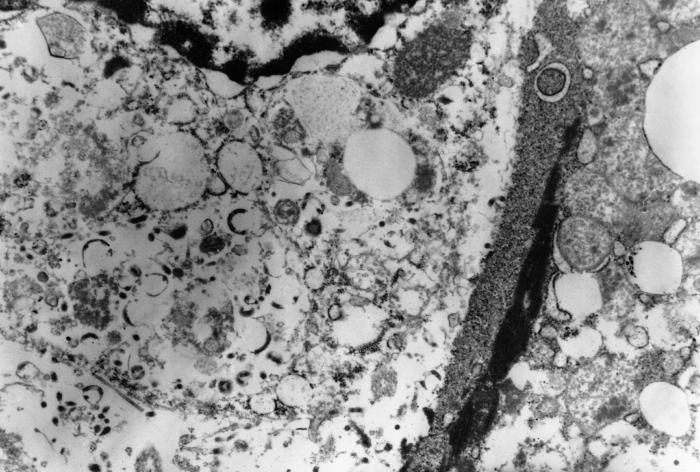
This is a transmission electron micrograph (TEM) of lung tissue, which was biopsied from a Marburg patient (case #1) who became ill in Johannesburg, South Africa, 1975.